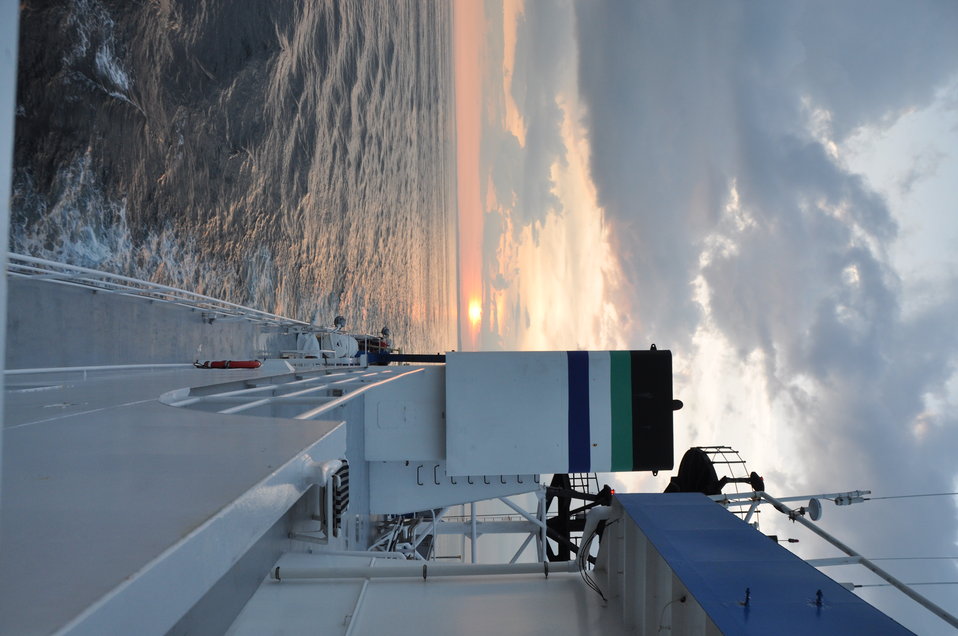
August 2009, Sunset down the starboard side of the Bold